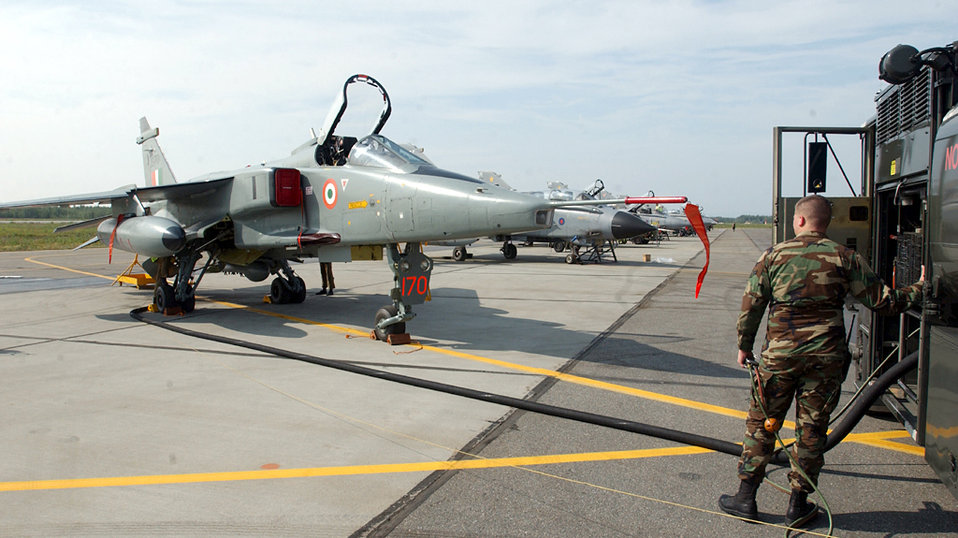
Preparing to cope

EIELSON AIR FORCE BASE, Alaska -- Airman 1st Class Trevor Smith fuels a GR-1 Jaguar from the Indian air force. He is assigned to the base's 354th Logistics Readiness Squadron. The Indian air force is just one group participating in Cooperative Cope Thunder 04-01 which begins July 15. Cooperative Cope Thunder is a combat-operations exercise involving aircraft from several services and nations.